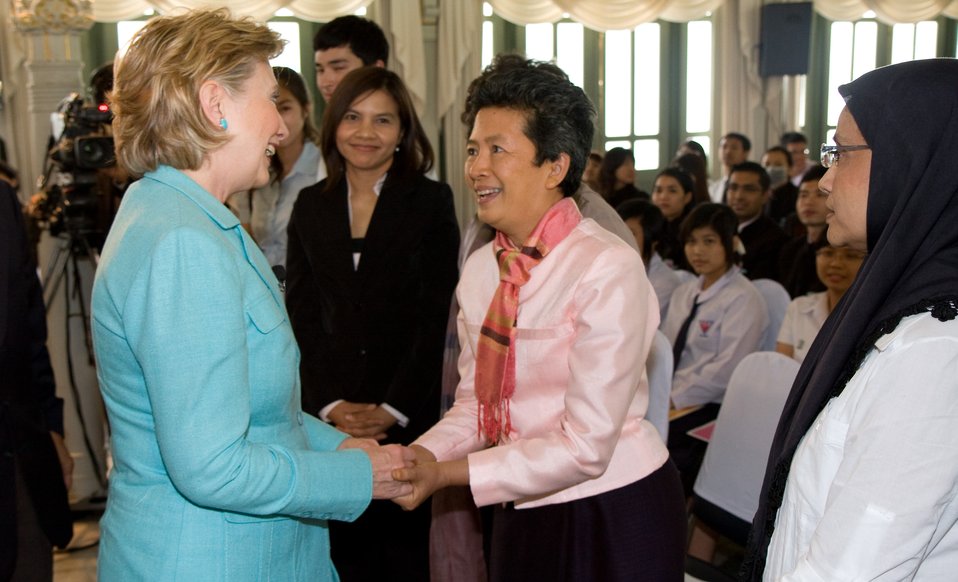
Secretary Clinton at Phyathai Palace

U.S. Secretary of State Hillary Rodham Clinton is greeted by Tuenjai Deetes, Founder and Advisor of the Hill Areas Development Foundation after an interview at Phyathai Palace in Bangkok, Thailand July 22, 2009.